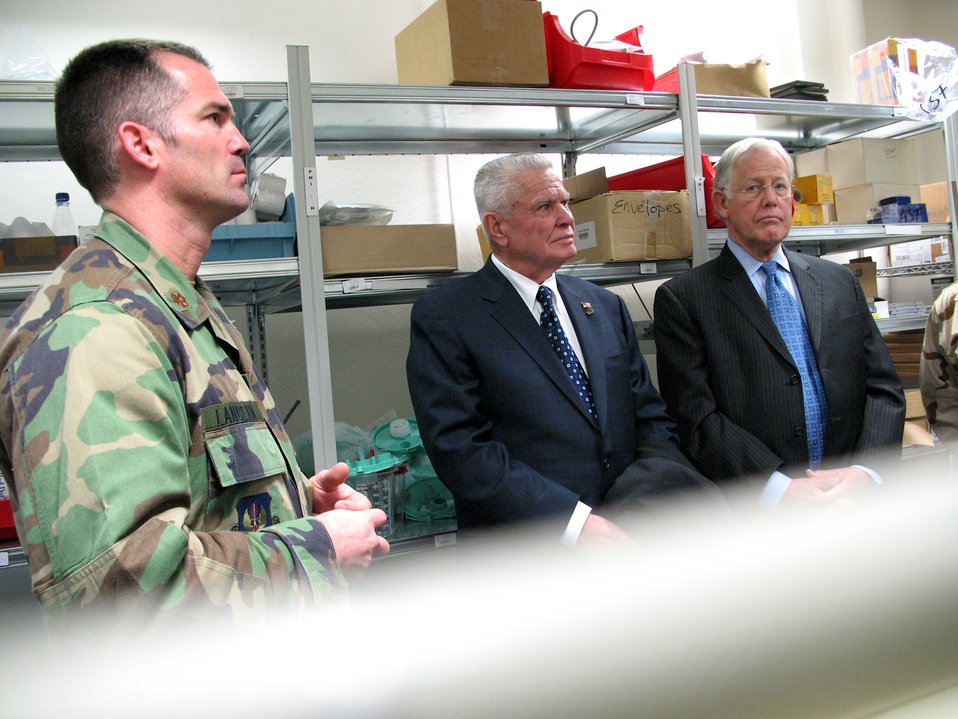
Top American doctors visit Ramstein, Landstuhl

Dr. William Plested (center) and Dr. J. Edward Hill (right) get a tour of the Contingency Aeromedical Staging Facility Feb. 22 at Ramstein Air Base, Germany. They were joined by Maj. Paul Langevin, the CASF commander. Dr. Plested is the president of the American Medical Association, and Dr. Hill is the former AMA president.